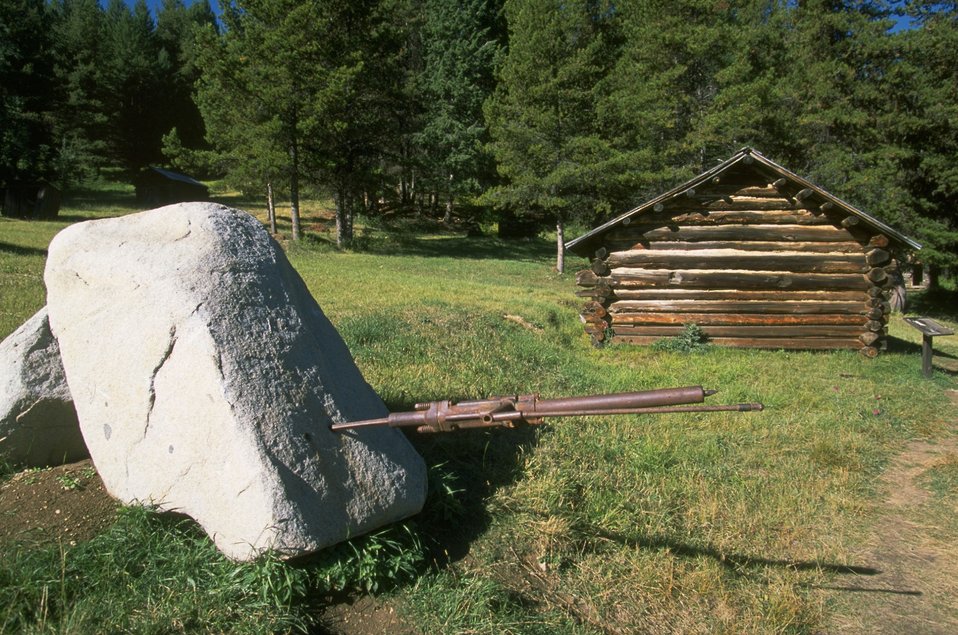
Garnet Ghost Town--rock drill and blacksmith shop